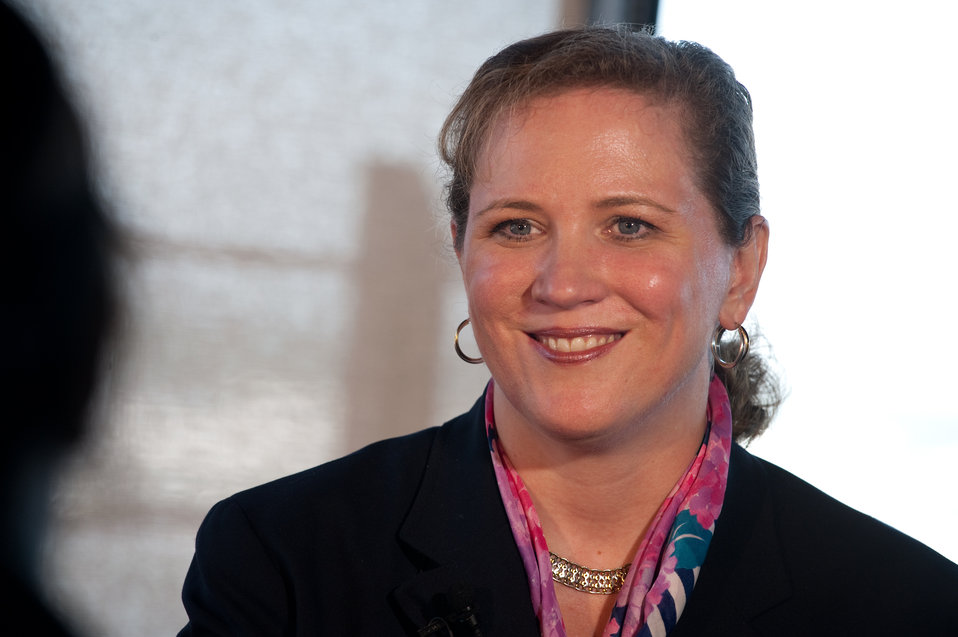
Air Force Week Cocoa Beach Launch

Undersecretary of the Air Force Erin C. Conaton answers questions Oct. 26, 2010, during an interview with Defense Media Activity reporters in Cocoa Beach, Fla. She was there to officiate the Proclamation Ceremony that formally launched Air Force Week Cocoa Beach. The Air Force Week runs through Oct. 31.